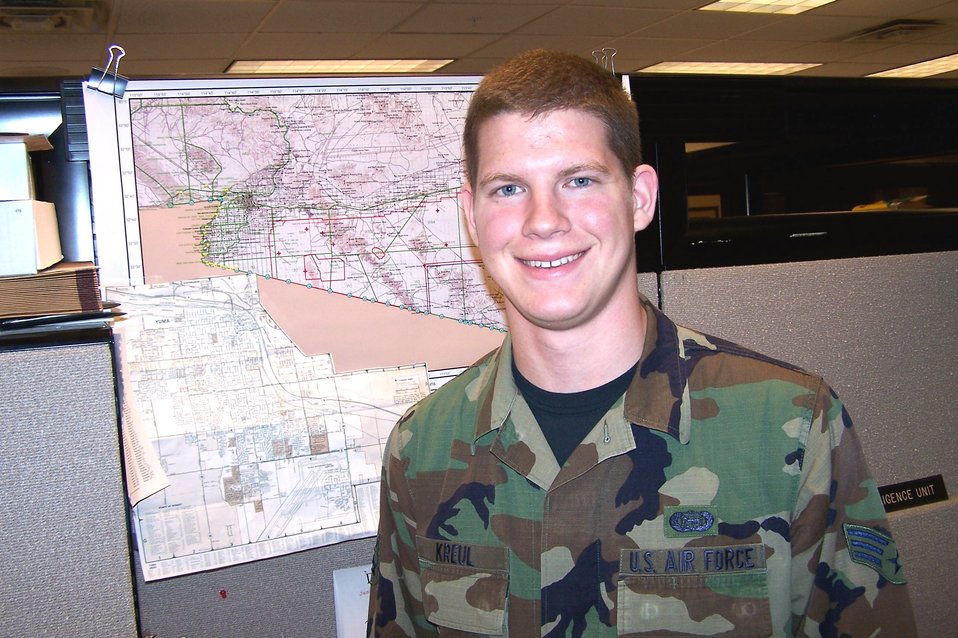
Serving through the holidays: Senior Airman Mark Kreul

South Dakota Air National Guardsman Senior Airman Mark Kreul is on duty this holiday season working with the U.S. Border Patrol to bolster security along the U.S.-Mexico border as part of Operation Jump Start. Airman Kreul, who works at the U.S. Border Patrol's Yuma, Ariz., sector headquarters, is an intelligence analyst for Task Force Yuma. When not deployed with the National Guard, he is a full-time student at South Dakota State University.